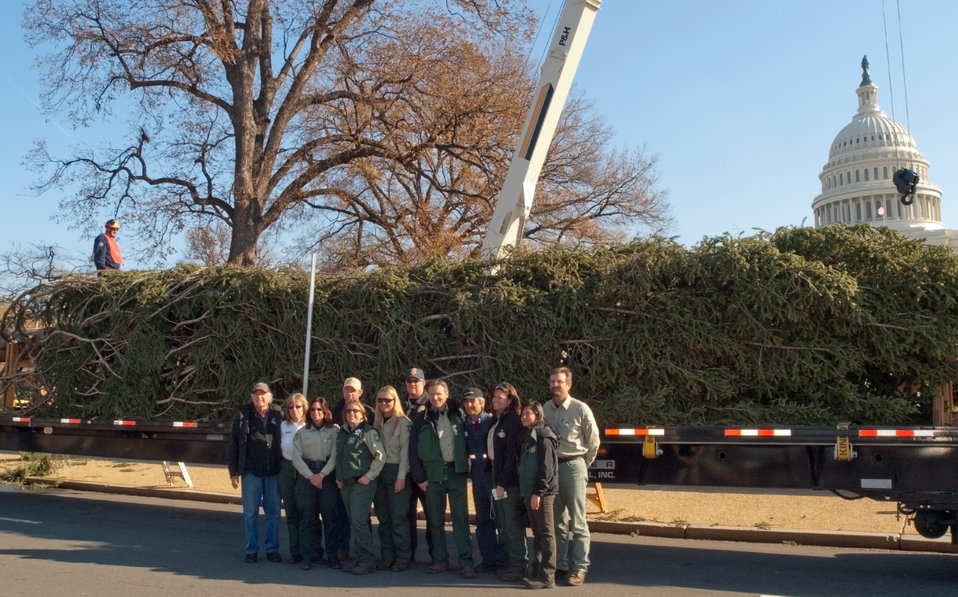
The 2012 Capitol Christmas Tree arrives in Washington, D.C. on Nov.26, 2012. The 73-foot Englemann spruce traveled from the White River National Forest in Colorado.